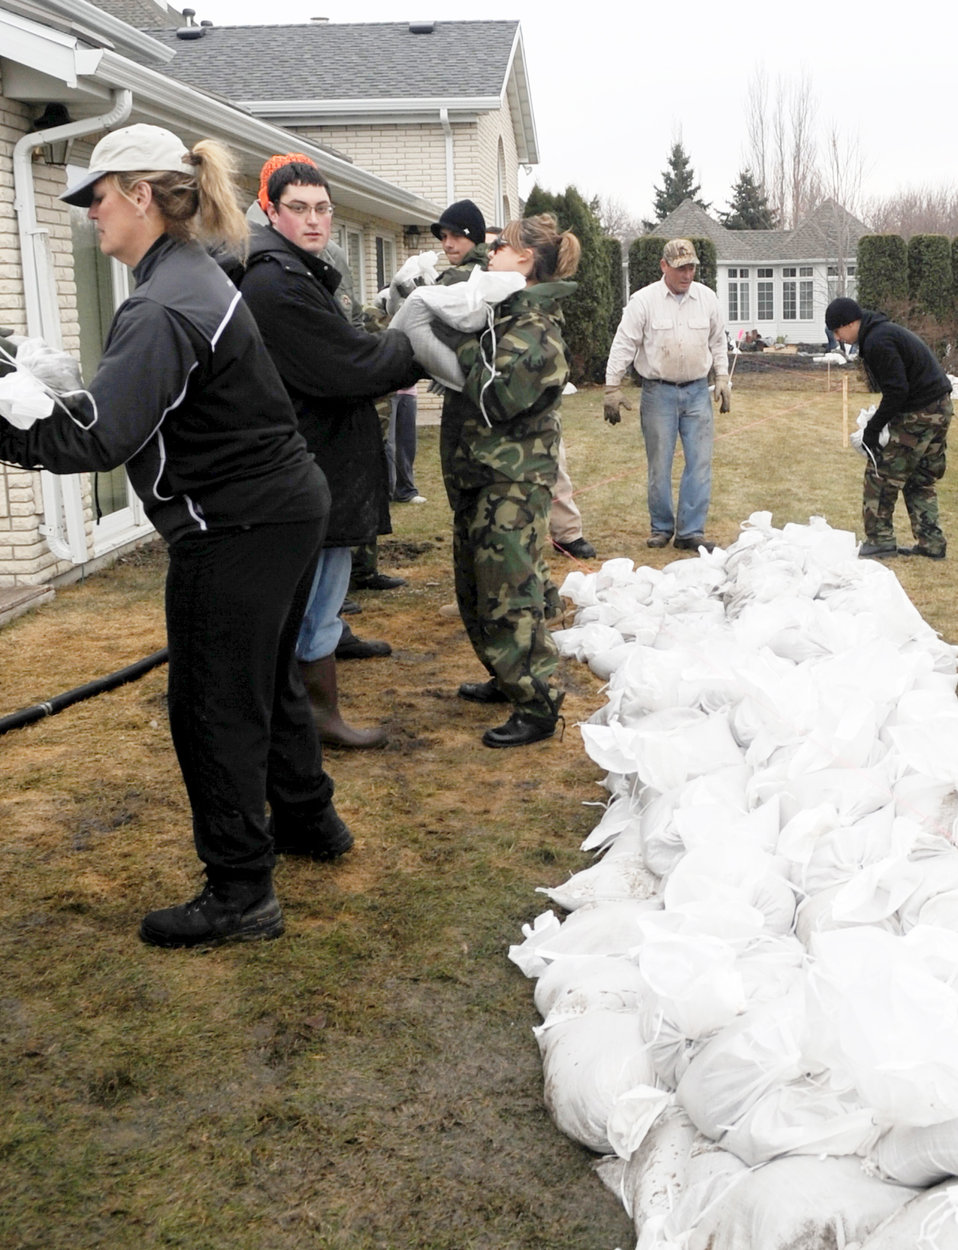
Airmen dedicate time, energy to flood preparations

Volunteers and neighbors work together to protect homes from rising flood waters in a Fargo, N.D., neighborhood. Many Grand Forks Air Force Base, N.D., Airmen have volunteered throughout the region to support flood protection efforts.